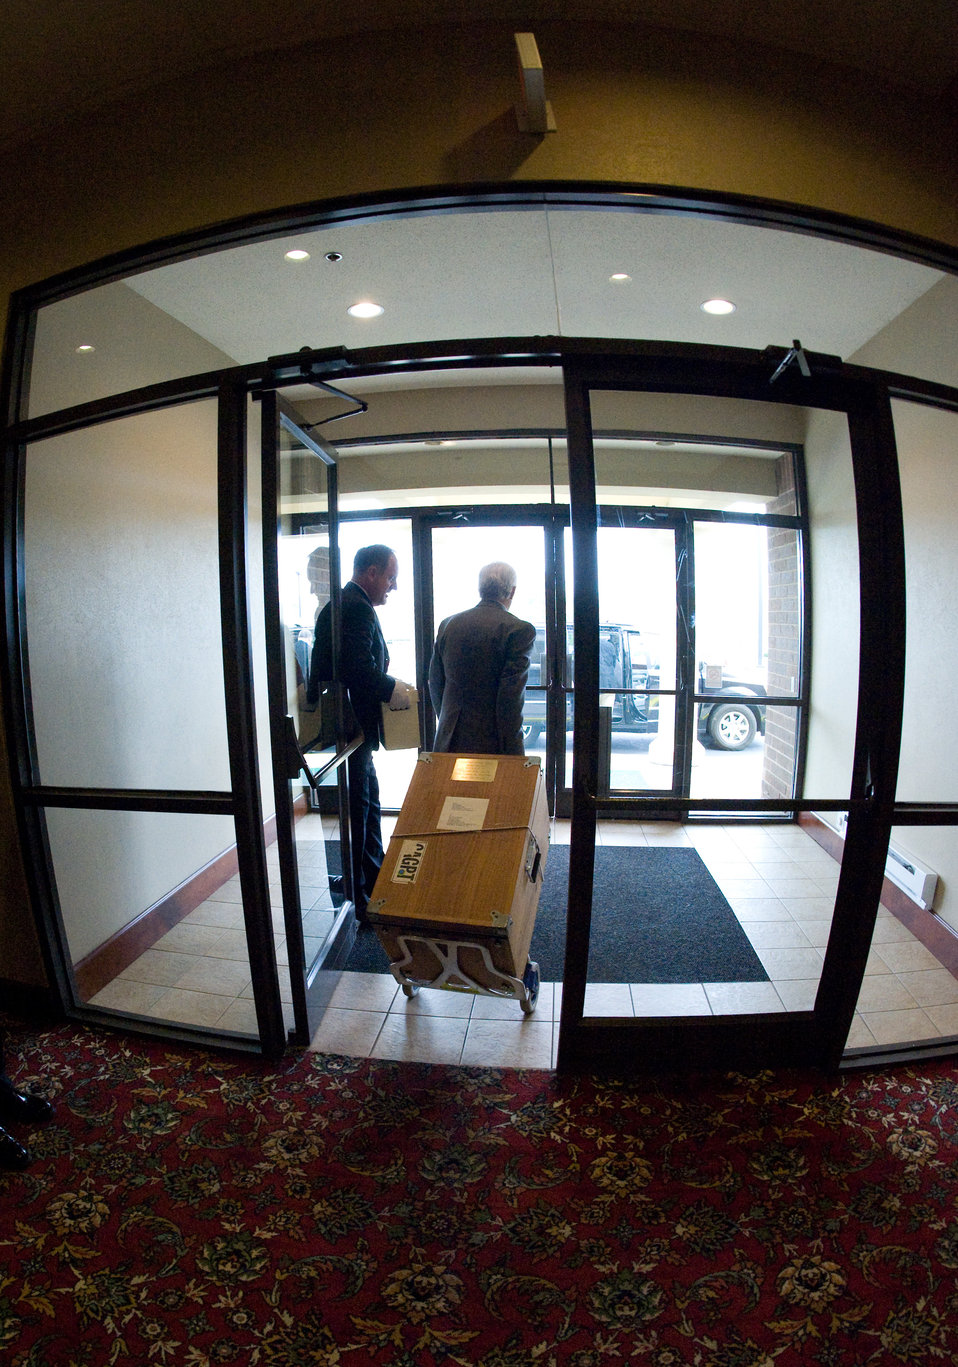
Doolittle Raiders' Goblet Ceremony

John Luchin (black suit), assists Robert Luchin transport the Doolittle Raiders' goblets following a ceremony in Fairborn, Ohio on April 6, 2010, to the National Museum of the U.S. Air Force where Adair is a conservator and Luchin is a collections registrar. The museum has the honor of keeping and transporting the goblets for the Doolittle Raiders. The set was last opened for the rarely seen ceremony in 2008.